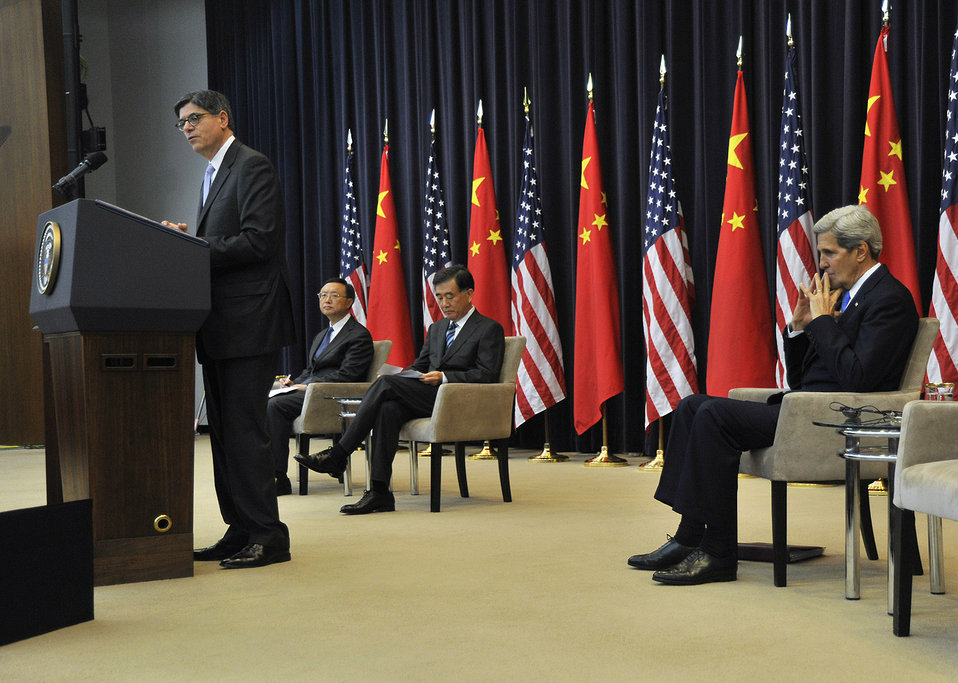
Secretary Lew delivers remarks at opening session of the U.S. China Strategic Economic Dialogue

July 10, 2013 - Secretary Lew delivers remarks during opening session of the U.S. China Strategic Economic Dialogue at the State Department in Washington, DC. Secretary of State John F. Kerry and Chinese co-chairs, Vice Premier Wang Yang and State Councilor Yang Jiechi listen.